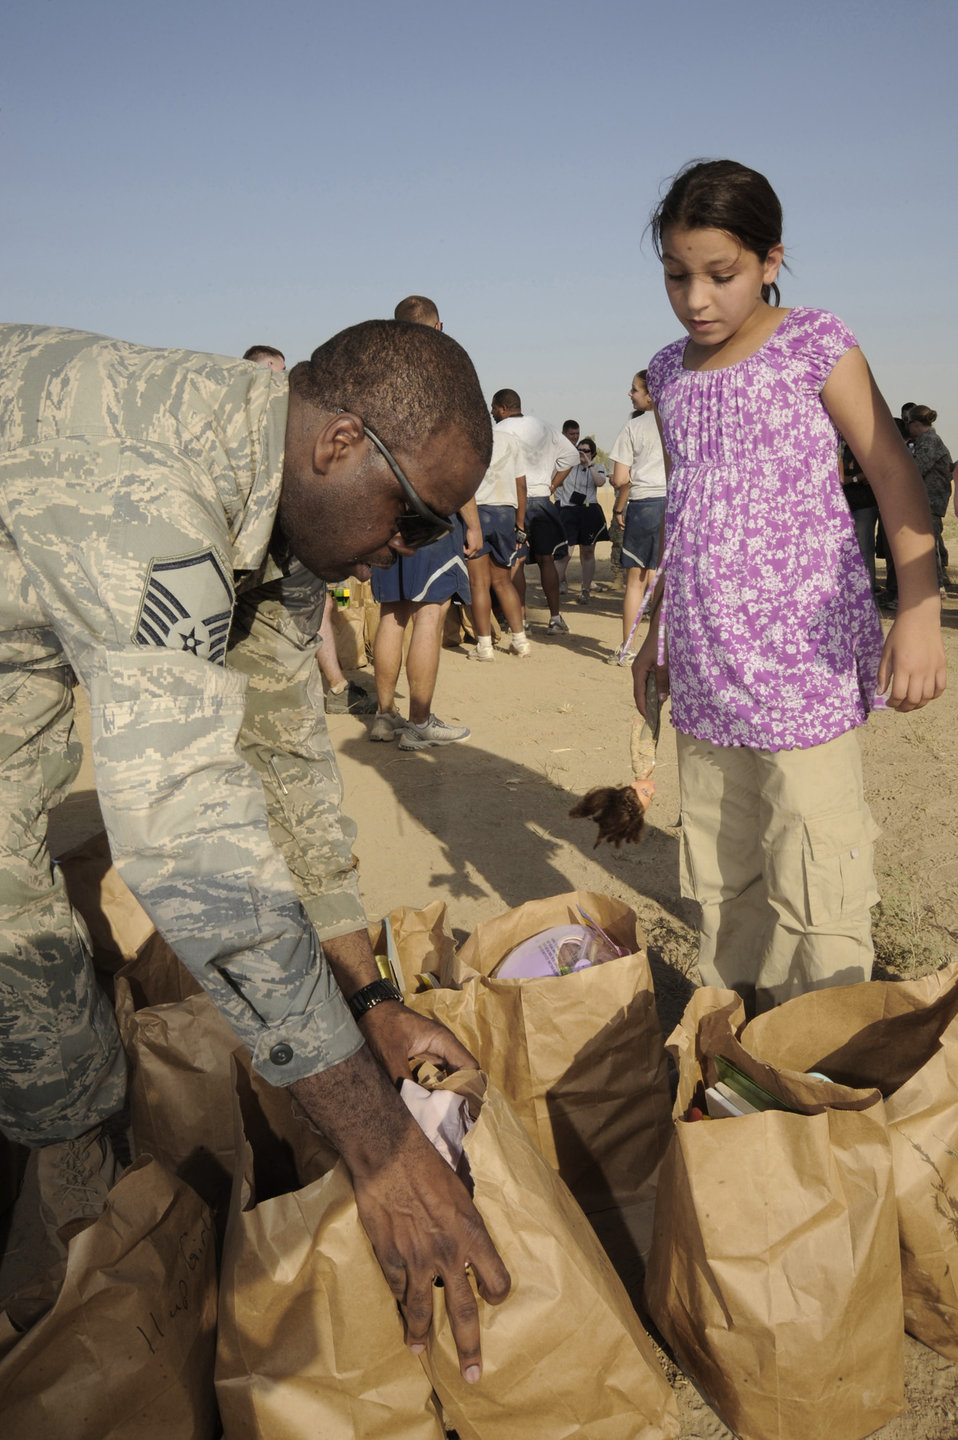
Airmen build ties with Iraqi families

Master Sgt. Shantell Frierson prepares to hand a bag full of donations to an Iraqi girl July 24 in Baghdad. Sergeant Frierson is a Multinational Corps-Iraq Joint Crew Composite Squadron automated data processing technician. Sergeant Frierson is deployed from Ramstein Air Base, Germany, and is a native of Coward, S.C.